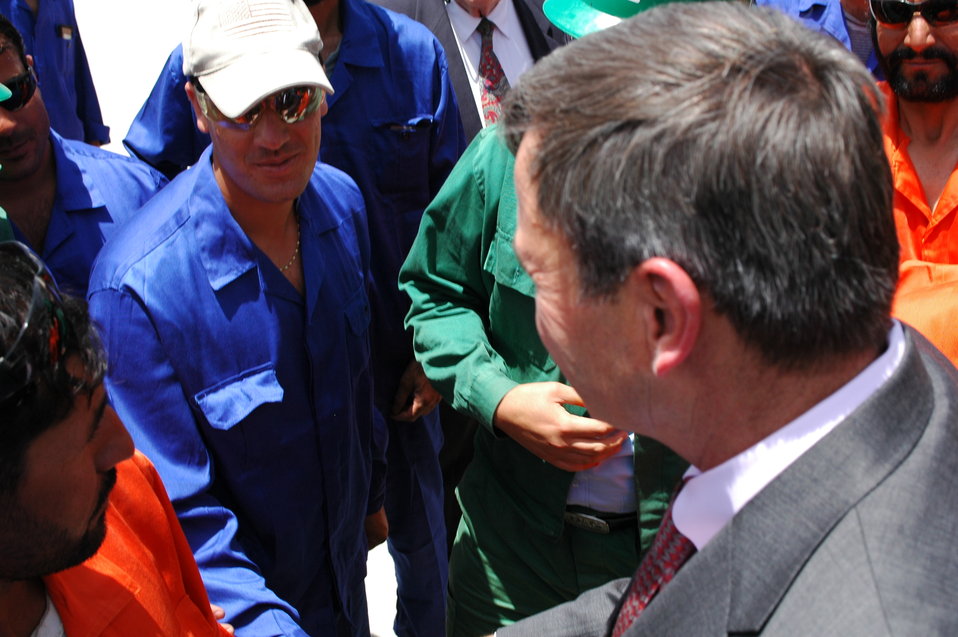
105 MW Tarakhil Power Plant Handover